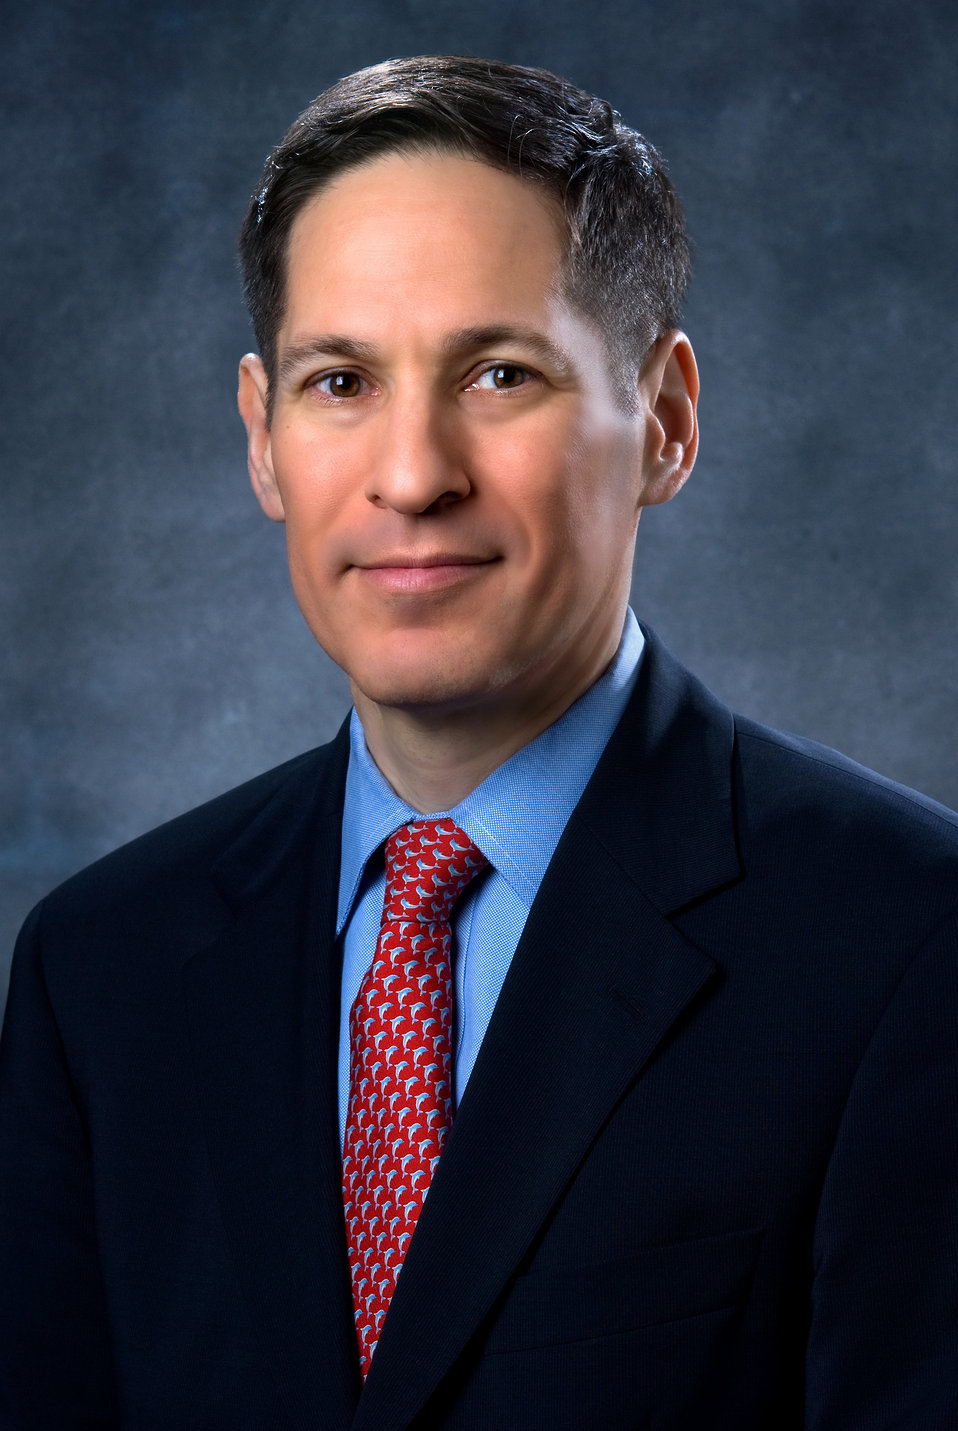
This 2009 photograph depicted Centers for Disease Control and Prevention (CDC) Director Thomas R. Frieden, M.D., M.P.H. Thomas R. Frieden, MD, MPH, became Director of the Centers for Disease Control and Prevention (CDC) and Administrator of the Agency for Toxic Substances and Disease Registry (ATSDR) in June 2009.Previously, he served as Commissioner of the New York City Department of Health and Mental Hygiene since January 2002. During his tenure, the number of smokers declined by 350,000, teen smoking decreased by half, and New York City became the first place in the United States to eliminate trans-fats from restaurants, rigorously monitor the diabetes epidemic, and require certain restaurants to post calorie information prominently. Under Dr. Frieden's leadership, the department established the largest community electronic health records project in the country. Dr. Frieden also chairs the New York City Board of Health.